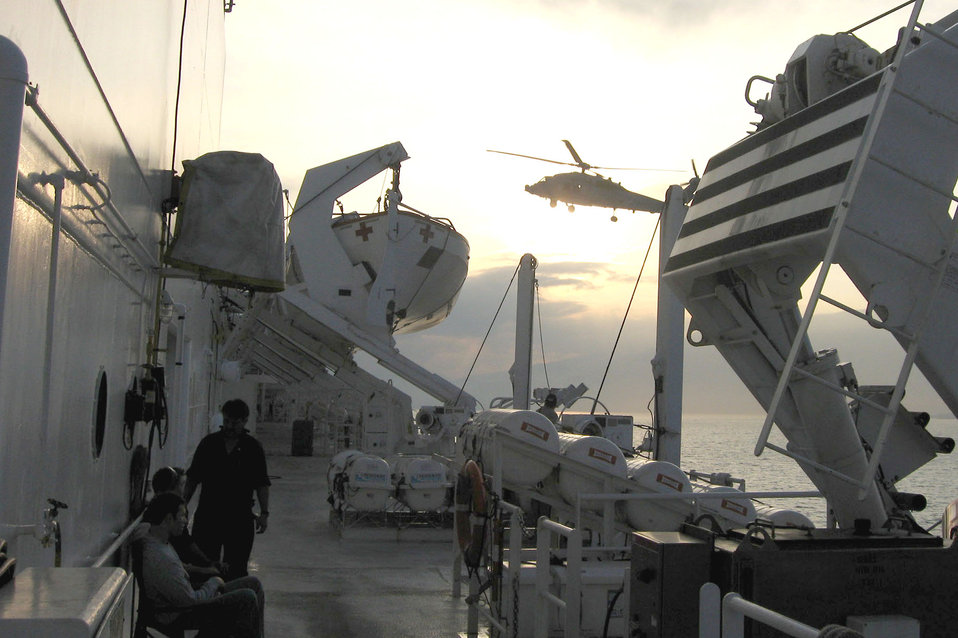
USNS Comfort arrives in Port-au-Prince

A Navy helicopter readies to land aboard the hospital ship USNS Comfort as it anchors Jan. 20, 2010 in Port-au-Prince harbor, Haiti. The ship deployed to assist in relief efforts following a Jan. 12 magnitude 7 earthquake that devastated the island nation.